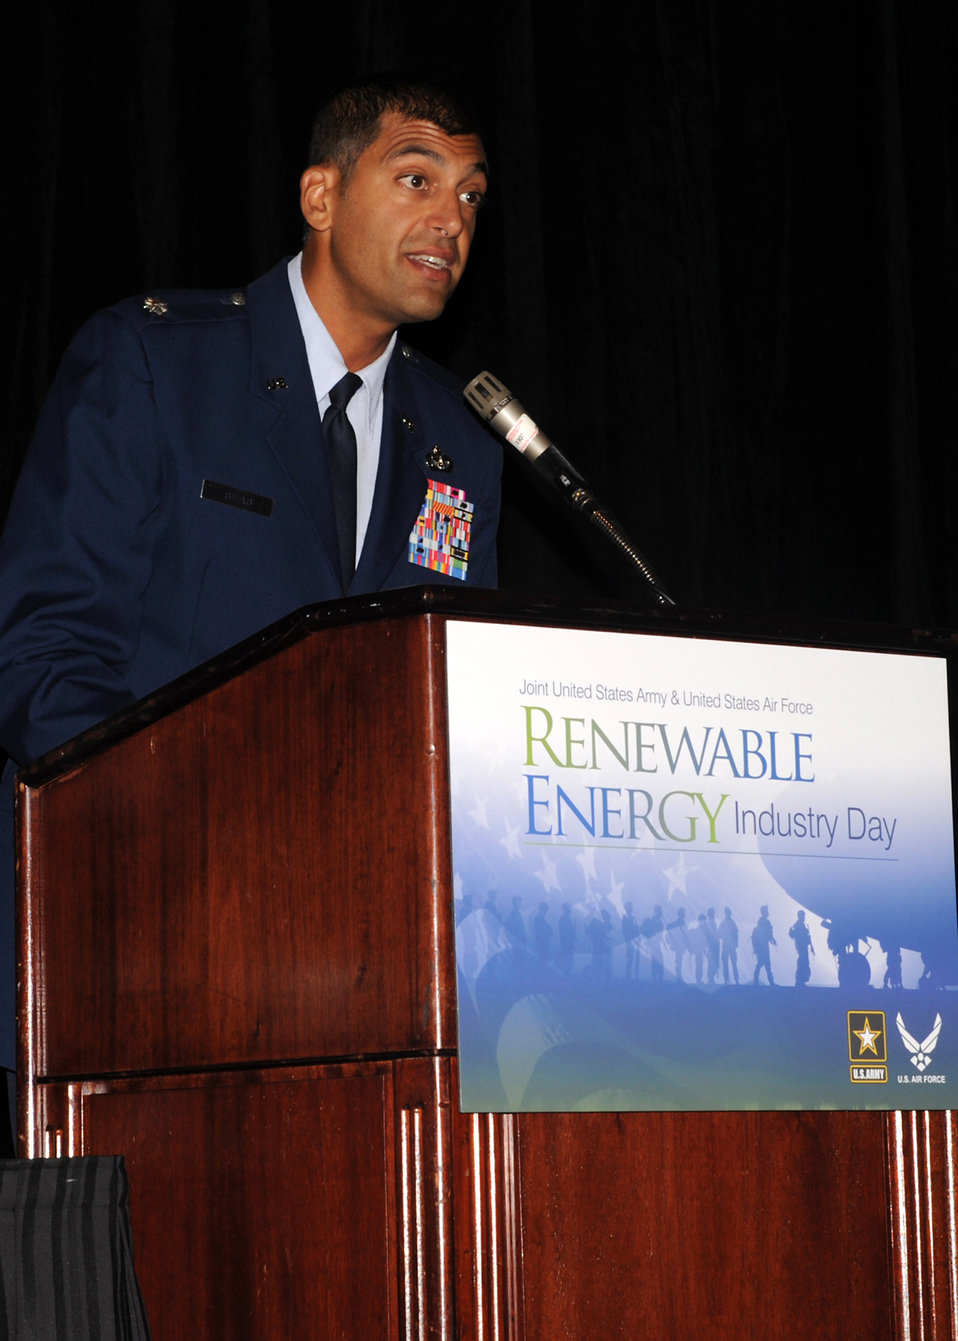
Leaders speak at renewable energy industry day event

Lt. Col. Paul Silas speaks at the Joint United States Army-United States Air Force Renewable Energy Industry Day on June 12, 2012, in Washington. The event brought together government and industry leaders to discuss opportunities for public-private collaboration in renewable energy development. Silas is the energy branch chief at the Office of the Air Force Civil Engineer.